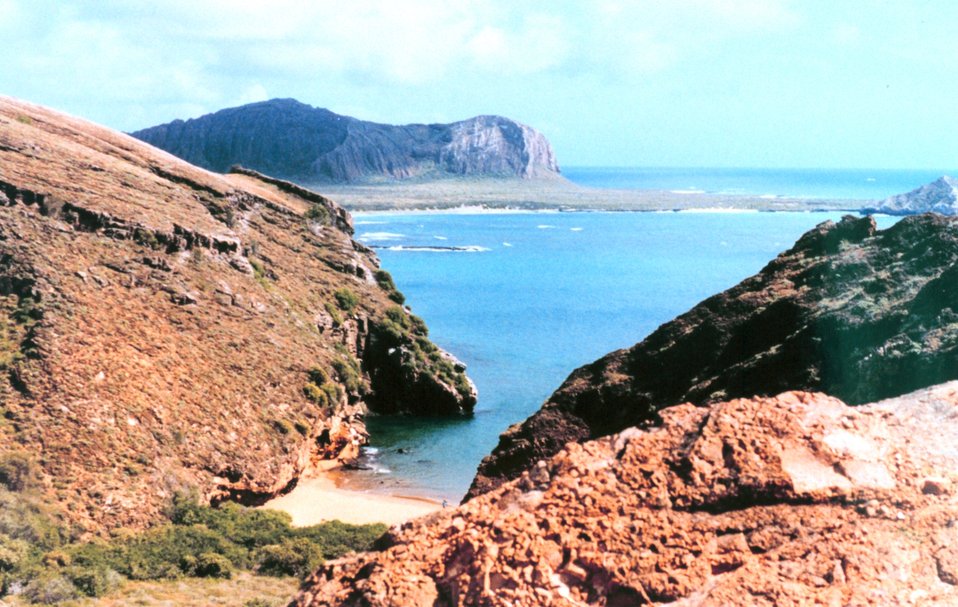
A quiet cove on San Cristobal Island